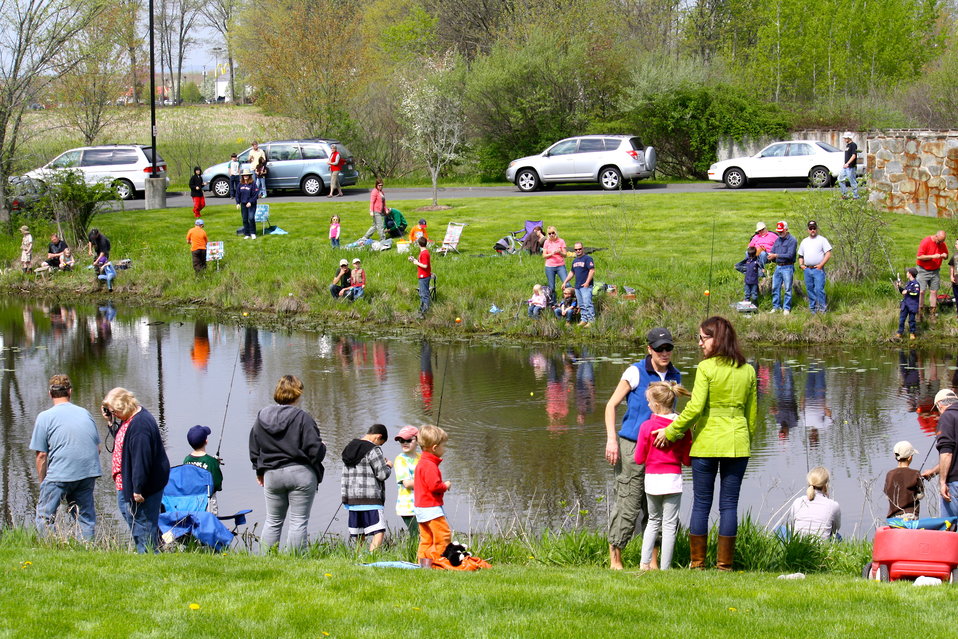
Fishing Derby 2011

Annual Fishing Derby held at the USFWS regional office in Hadley, MA on May 7, 2011.